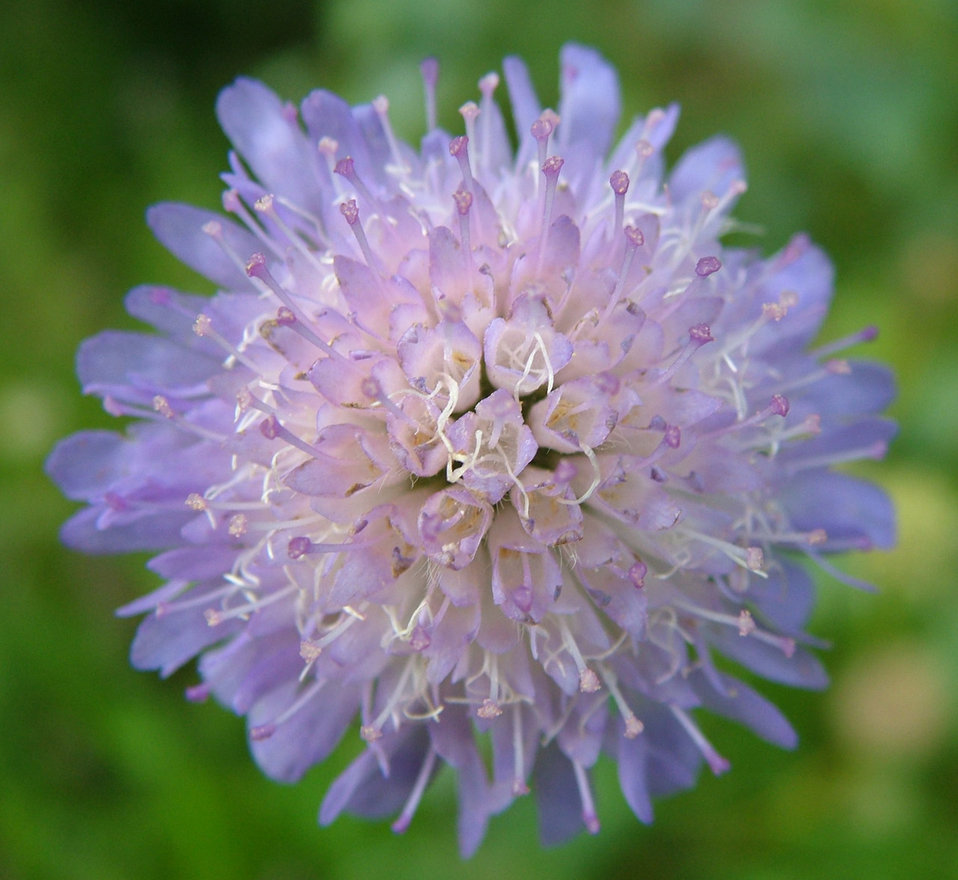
Flower

Beautiful flower.